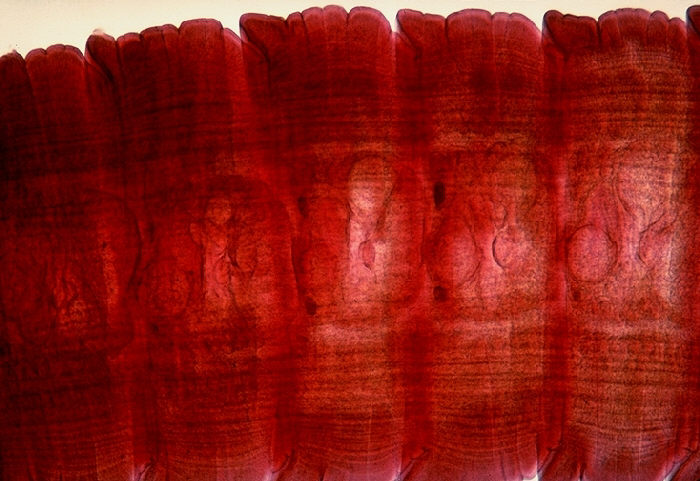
Posterior chain of Mesocestoides sp.